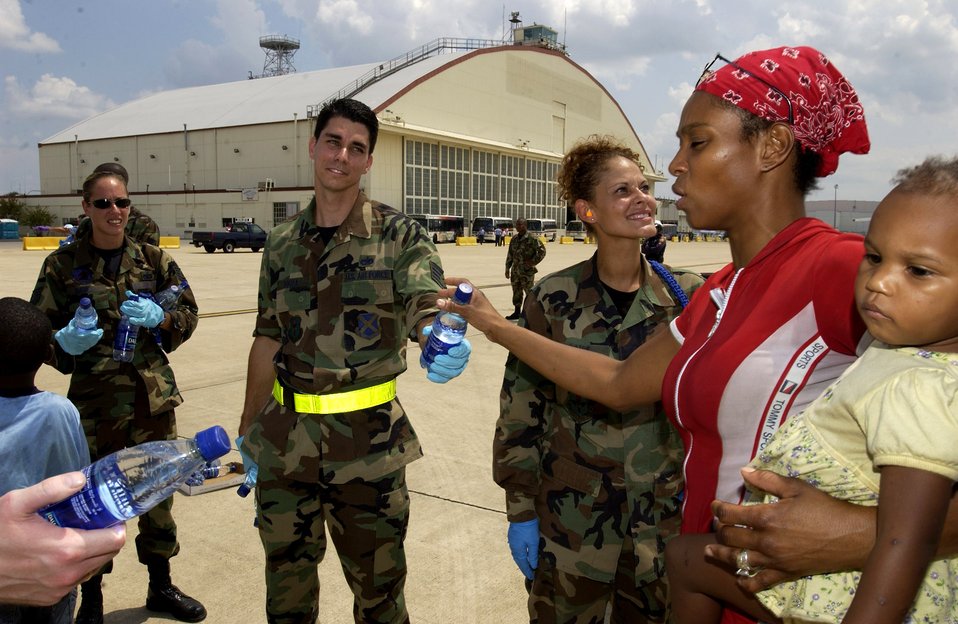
Aeromedical evacuation hub established at Lackland

LACKLAND AIR FORCE BASE, Texas -- Staff Sgt. John Souza hands out water to Hurricane Katrina evacuees here. The evacuees arrived Sept. 2 from New Orleans. They are being inprocessed, given a medical checkup, fed and put into temporary shelters. Sergeant Souza is assigned to the 343rd Training Squadron.